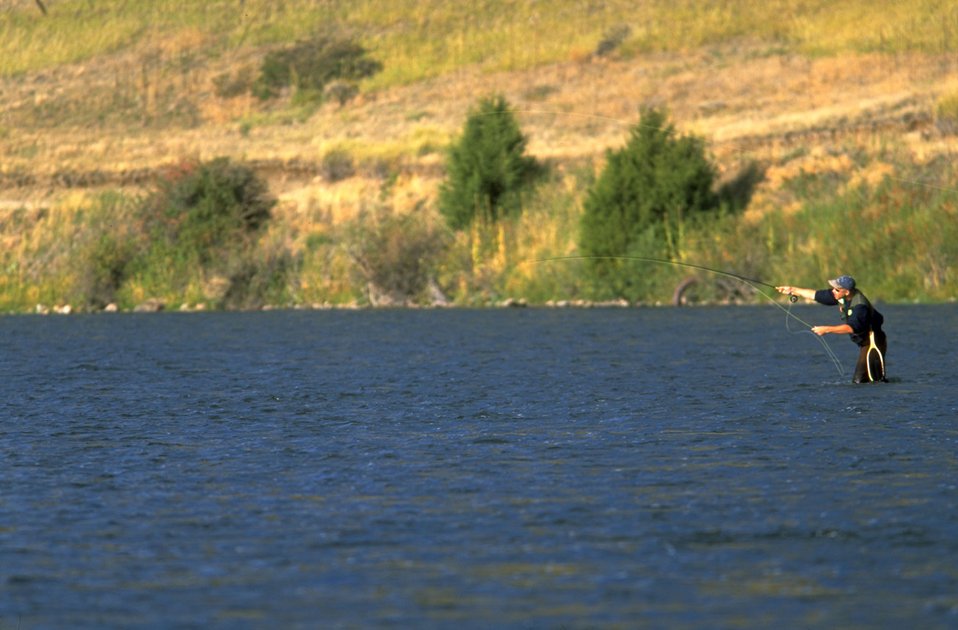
Casting for Fish